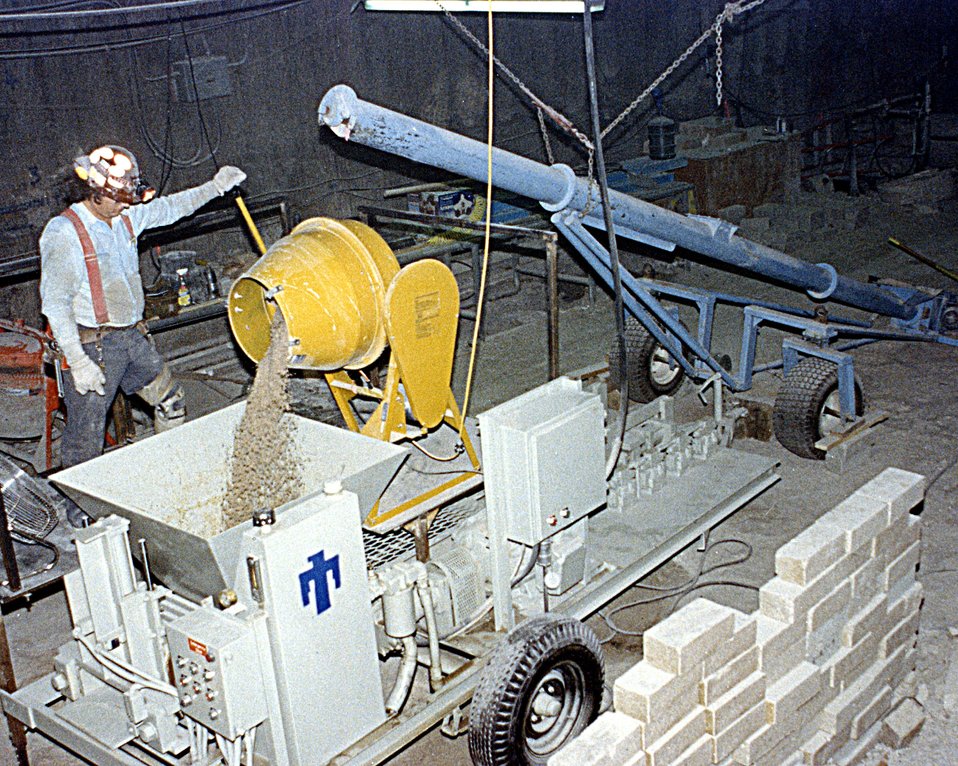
ADOBE SALT BLOCK MAKING MACHINE USED FOR PLUGGING AND SEALING TESTS.

THE WASTE ISOLATION PILOT PLANT IS A DOE RESEARCH AND DEVELOPMENT FACILITY FOR DEMONSTRATING THE SAFE DISPOSAL OF TRANSURANIC RADIOACTIVE WASTES. TEST SHAFTS HAVE BEEN DRILLED TO A DEPTH OF 2,100 FEET. THE SHAFTS, ONE 6 FEET IN DIAMETER AND THE OTHER 12 FEET IN DIAMETER, PROVIDE AN ENTRY PASSAGE AND VENTILATION TO THE UNDERGROUND SALT ROCK FORMATION THAT IS BEING TESTED TO DETERMINE ITS SUITABILITY FOR RADIOACTIVE WASTE STORAGE.